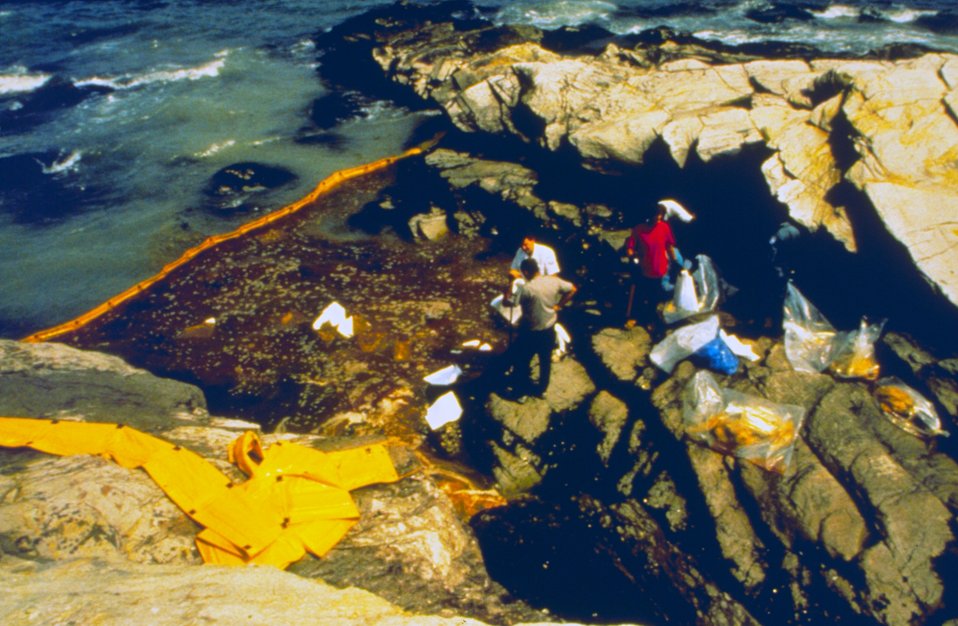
Spill clean-up procedures. Close to 300,000 gallons of oil were spilled in Narragansett Bay, RI waters.